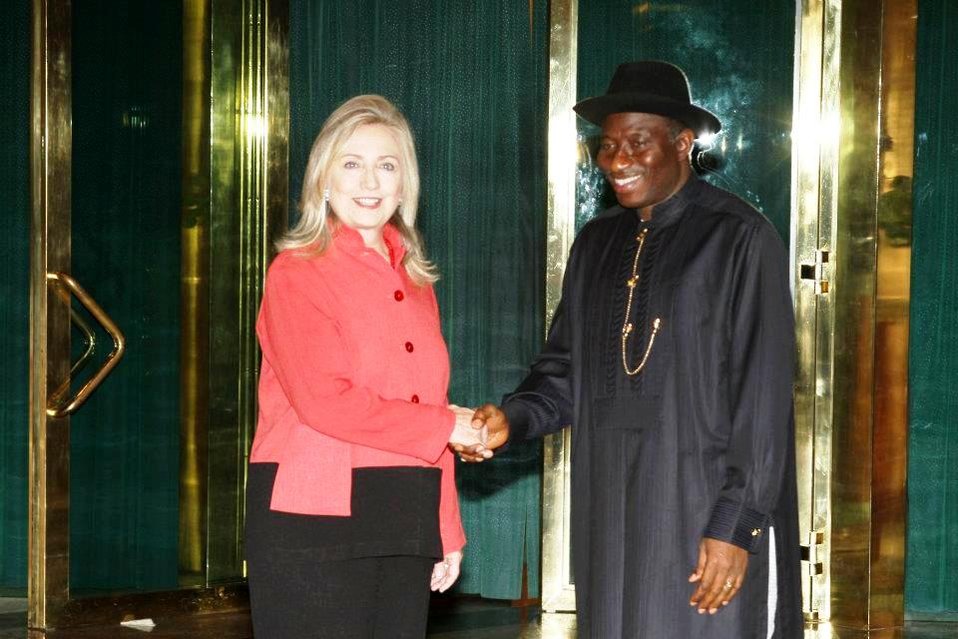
Secretary Clinton Meets With Nigerian President Goodluck Jonathan

U.S. Secretary of State Hillary Rodham Clinton meets with Nigerian President Goodluck Jonathan at the Presidential Villa in Abuja, Nigeria, on August 9, 2012.